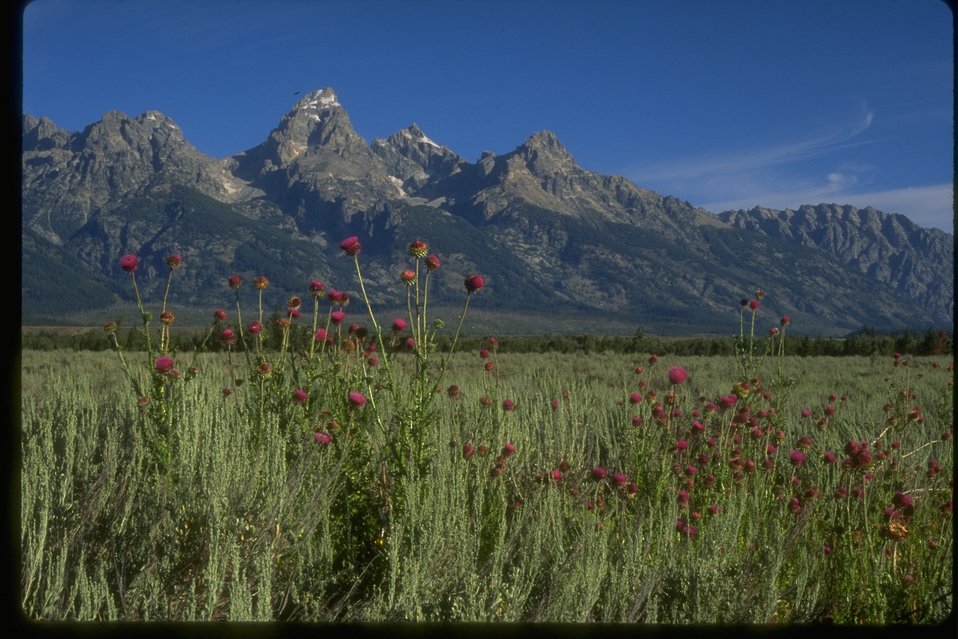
Musk thistle and Teton National Park.